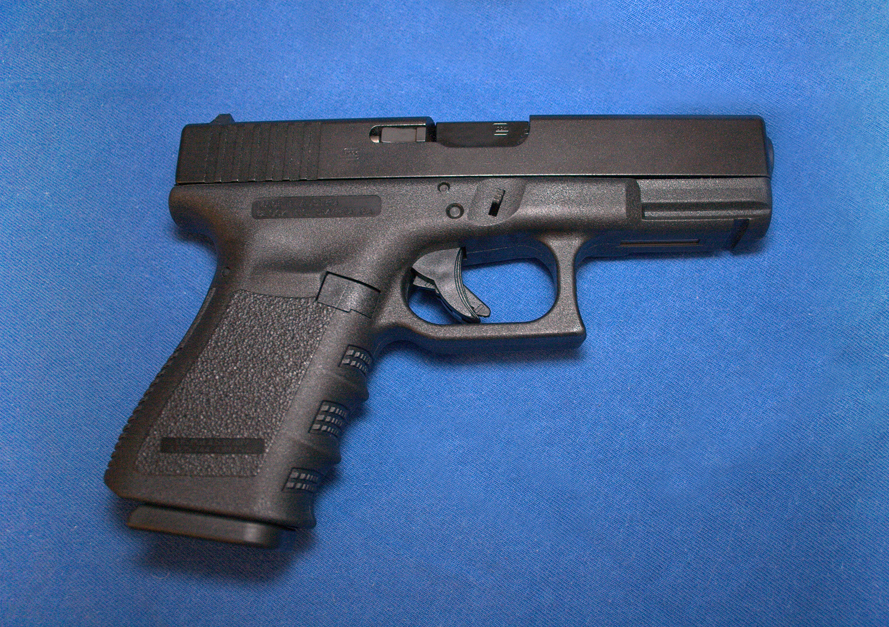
Glock 19 Pistol,